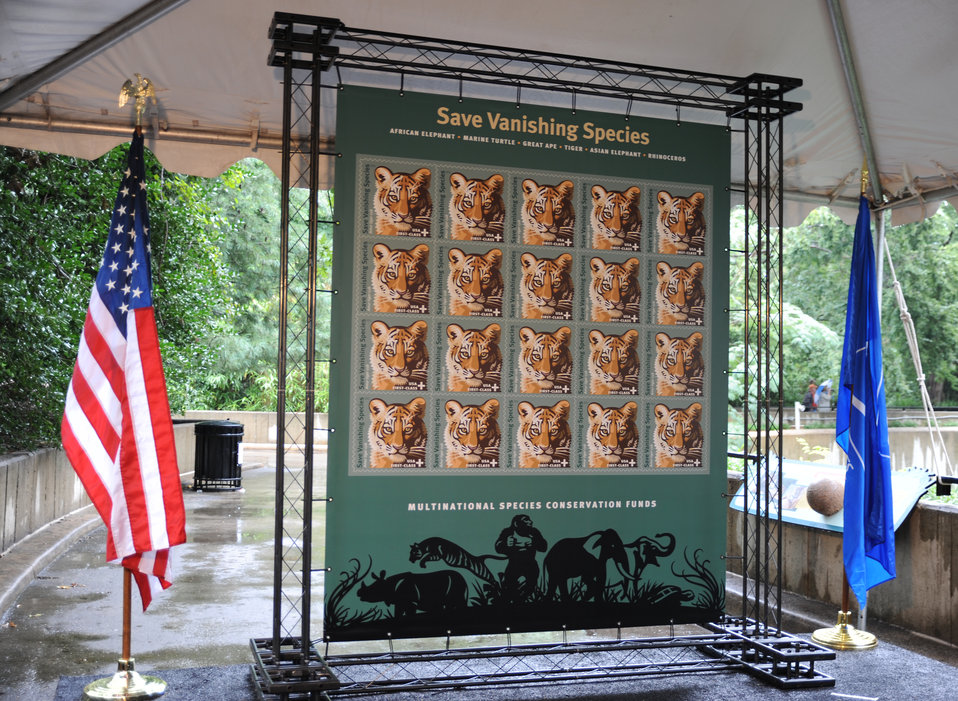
Save Vanishing Species Stamp First Day of Issue